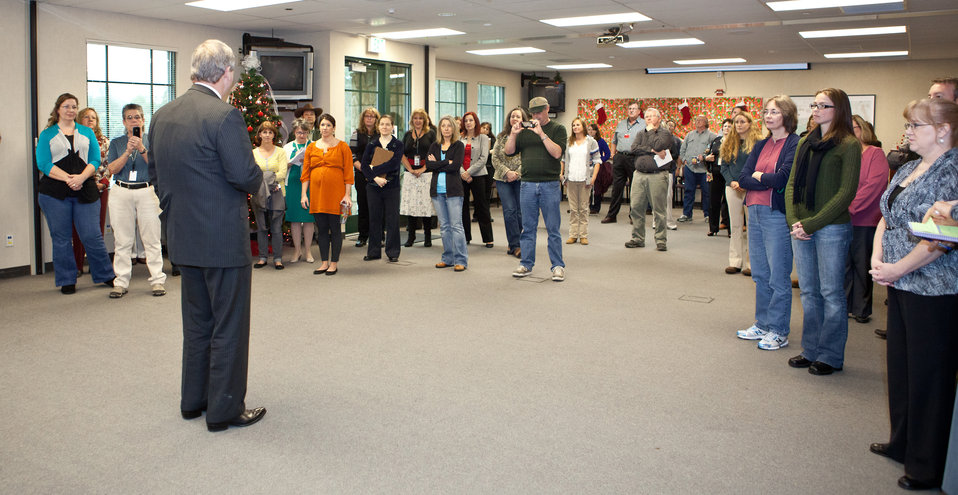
Agriculture Secretary Tom Vilsack speaks with U.S. Department of Agriculture (USDA) employees at the Shasta-Trinity National Forest headquarters in Redding, CA on Dec. 10, 2012.